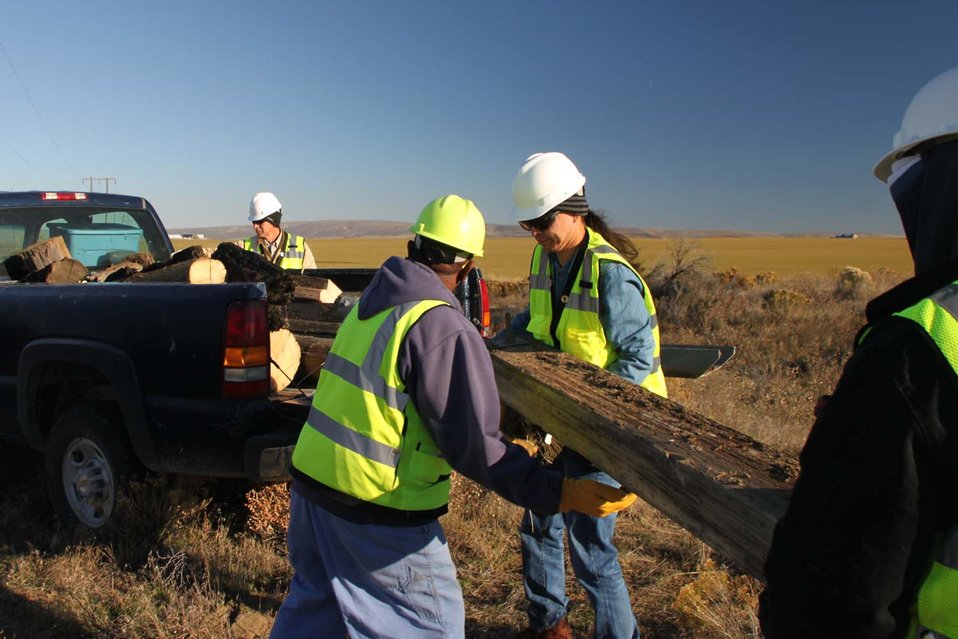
Debris removal from the North Slope

Recovery Act workers load debris for removal from the North Slope at the Hanford Reach National Monument